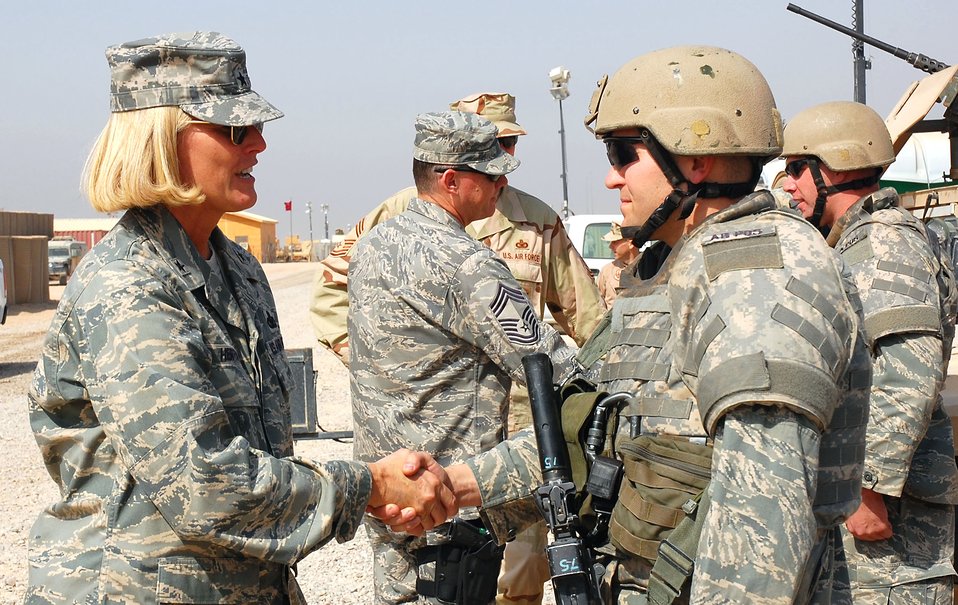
Top Cop visits deployed Airmen

Brig. Gen. Mary Kay Hertog visits with deployed Airmen to discuss deployment tempos, training and the future of the career field Oct. 10 at Camp Bucca, Iraq. General Hertog is the Air Force Security Forces director.